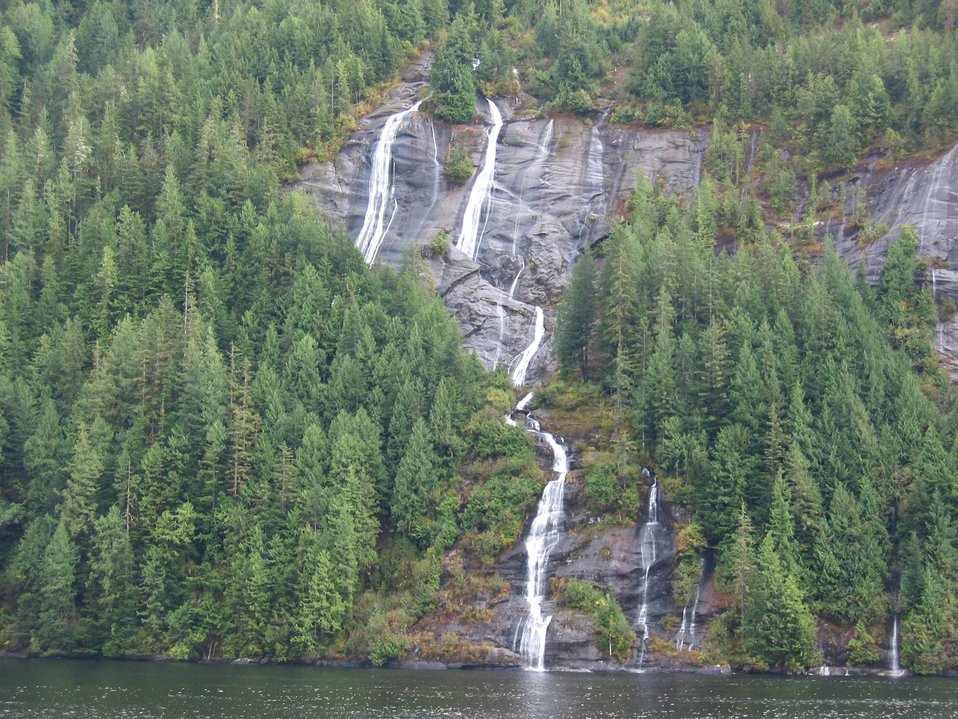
Dancing waterfalls, grey cliffs and evergreens at the edge of the sea.